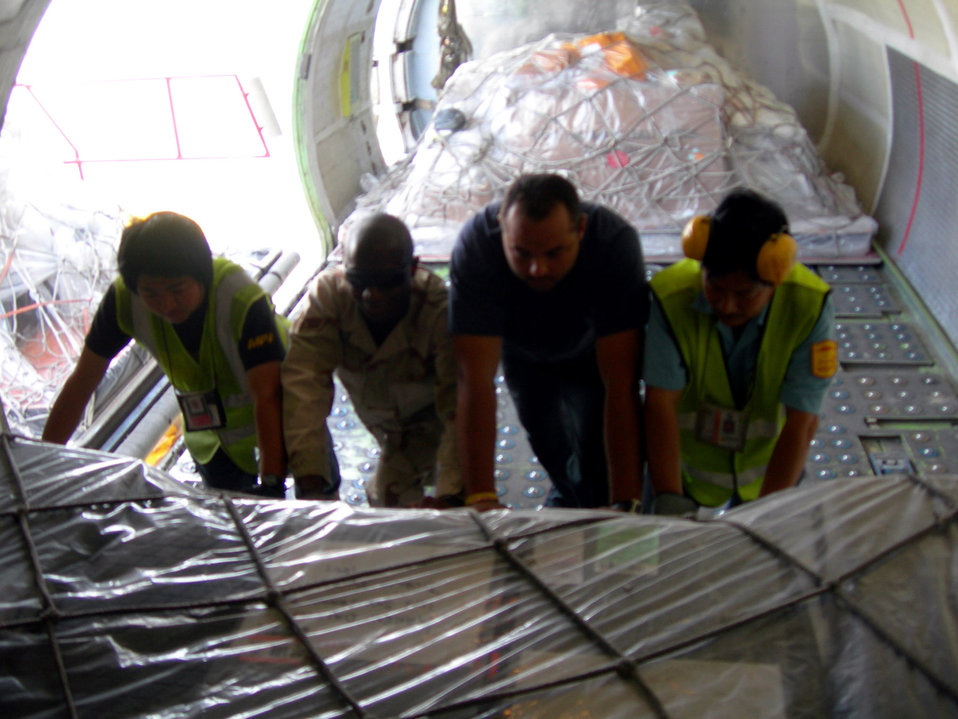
Airmen provide 1st class postal service to thousands

Senior Airman Kevin Goldman and contractors load outgoing mail onto a cargo aircraft at Balad Air Base, Iraq. The Joint Military Mail Terminal sends out approximately 85,000 pounds of outgoing mail each week. Every day two aircraft deliver and pick up an average of 18 pallets of mail to and from the base. Airman Reynolds is assigned to the 332nd Expeditionary Communications Squadron.